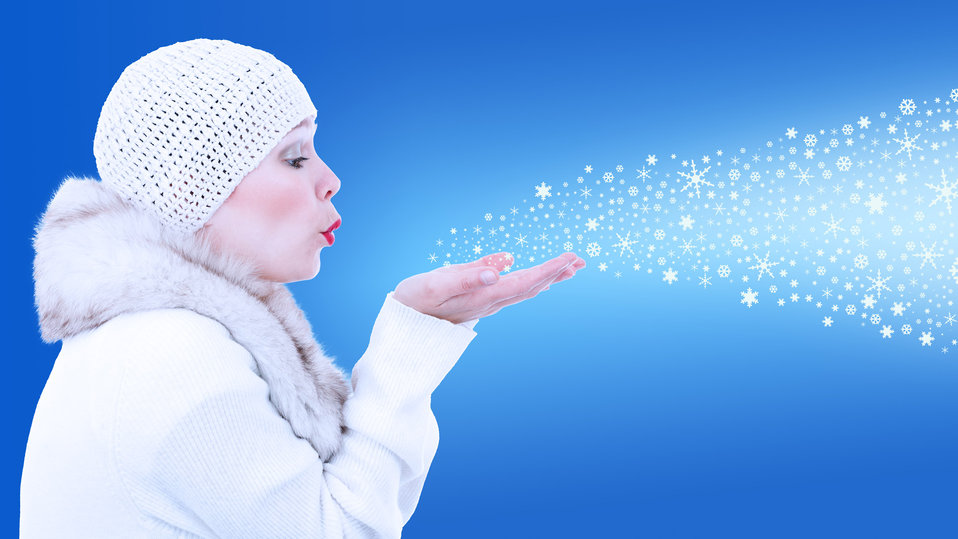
Girl in winter blowing snow.